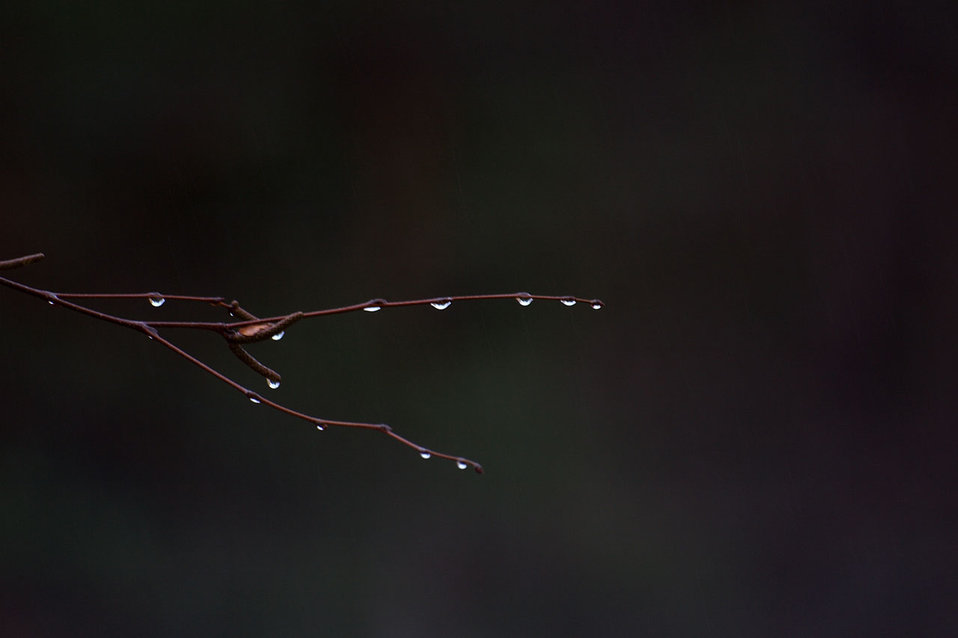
Willow

A willow with raindrops.